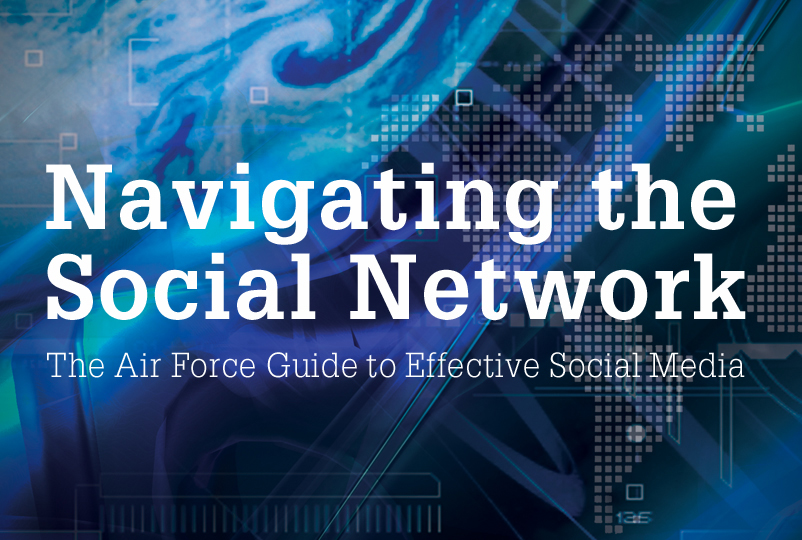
Social Media

Air Force guide to social media